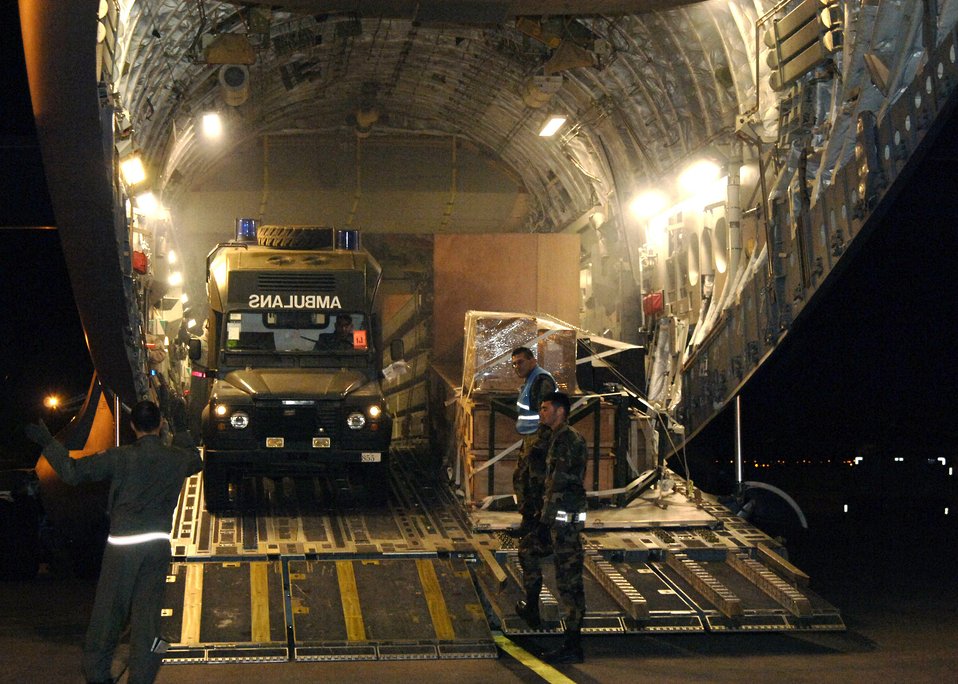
Turkey partners with U.S. in war on terrorism

A load team from the 728th Air Mobility Squadron directs the placement of a Turkish ambulance on a C-17 Globemaster III April 16 at Incirlik Air Base, Turkey. More than 135,000 pounds of Turkish equipment and supplies was transported from Incirlik AB to Kabul AB, Afghanistan, April 15 to 17.